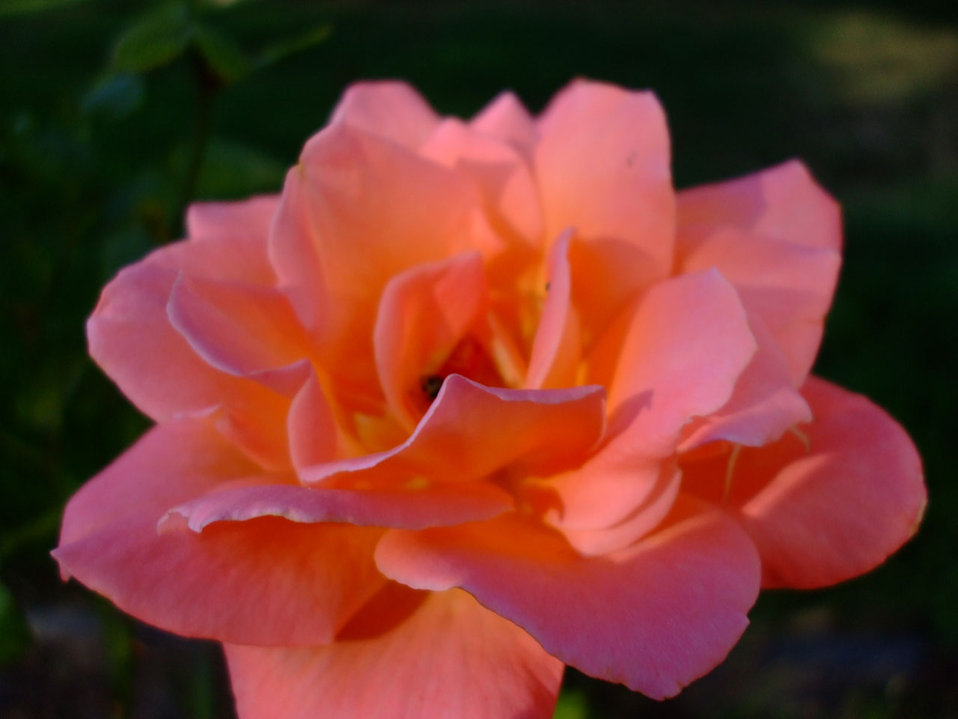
Elegant rose

Rose with vivid colors.